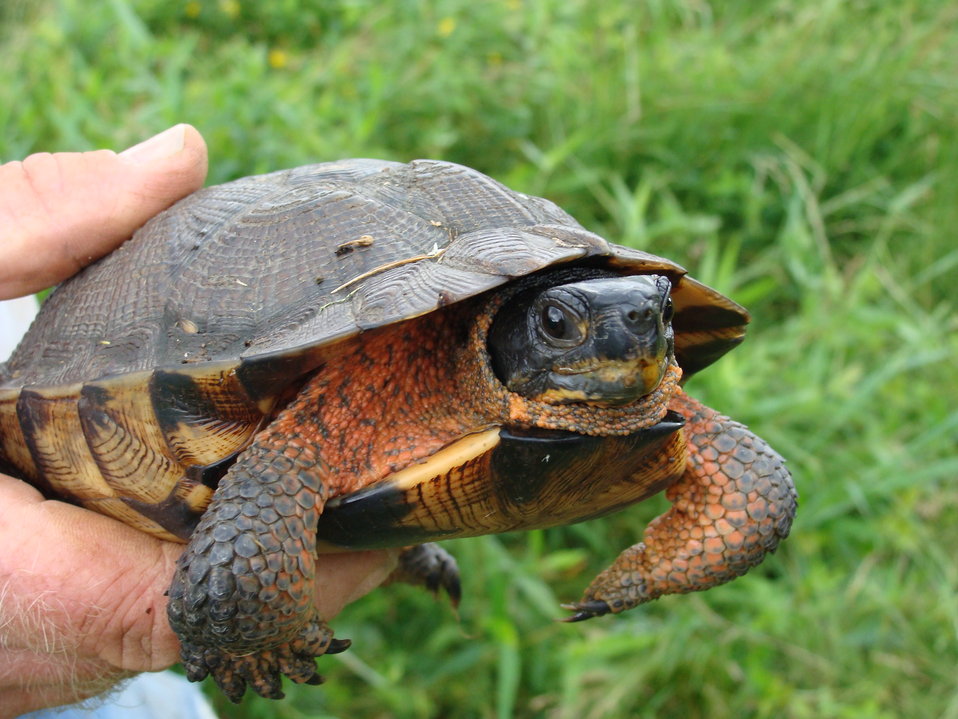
Wood Turtle

Adult Wood turtle in hand at Great Swamp National Wildlife Refuge